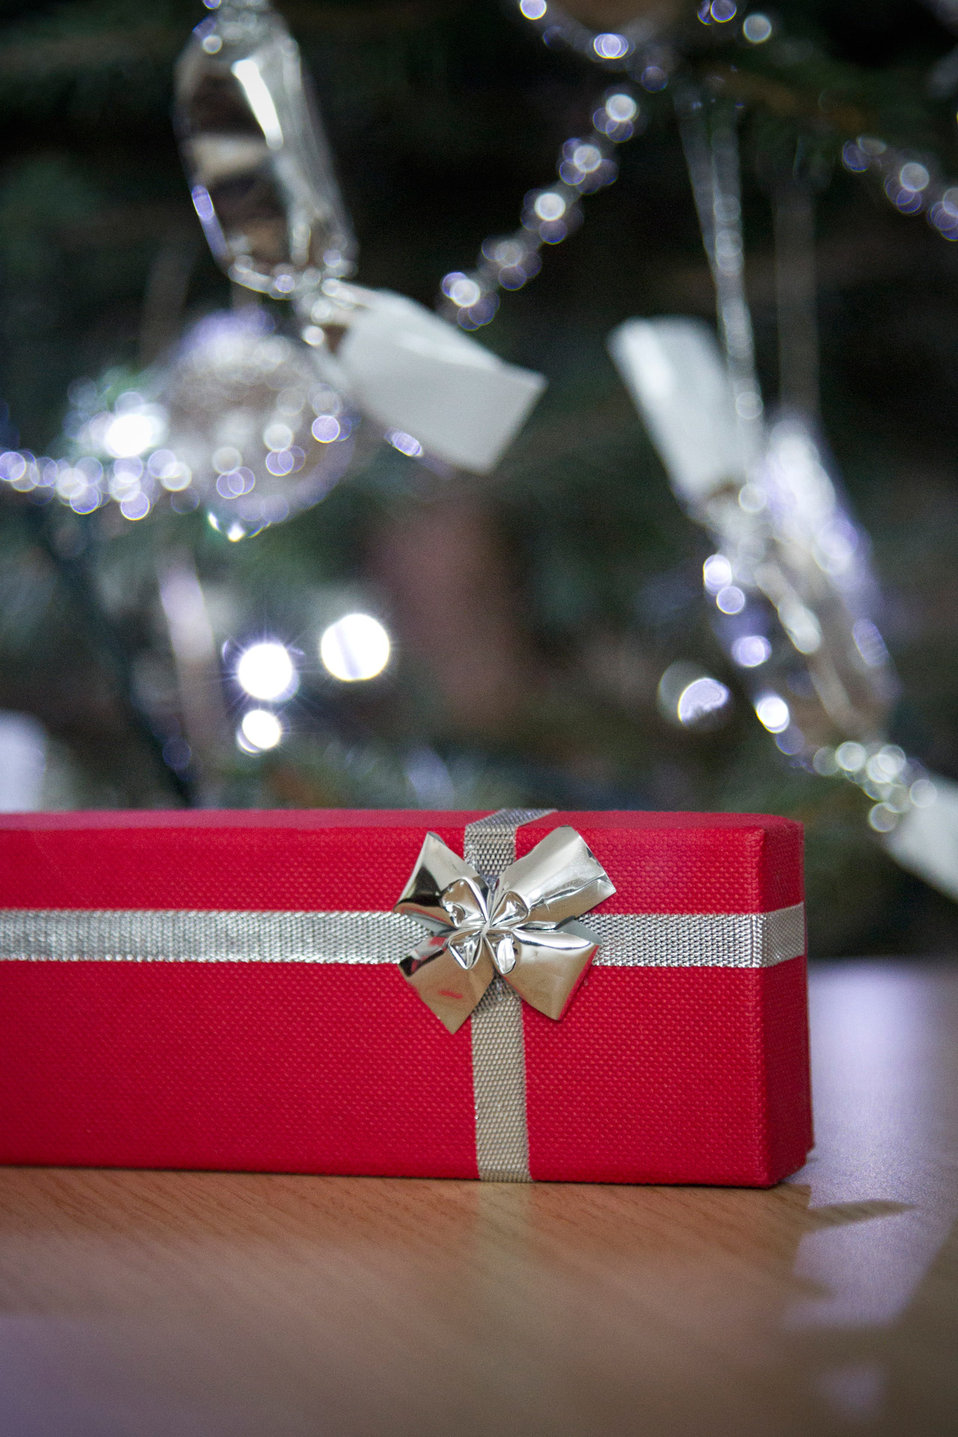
Christmas present.